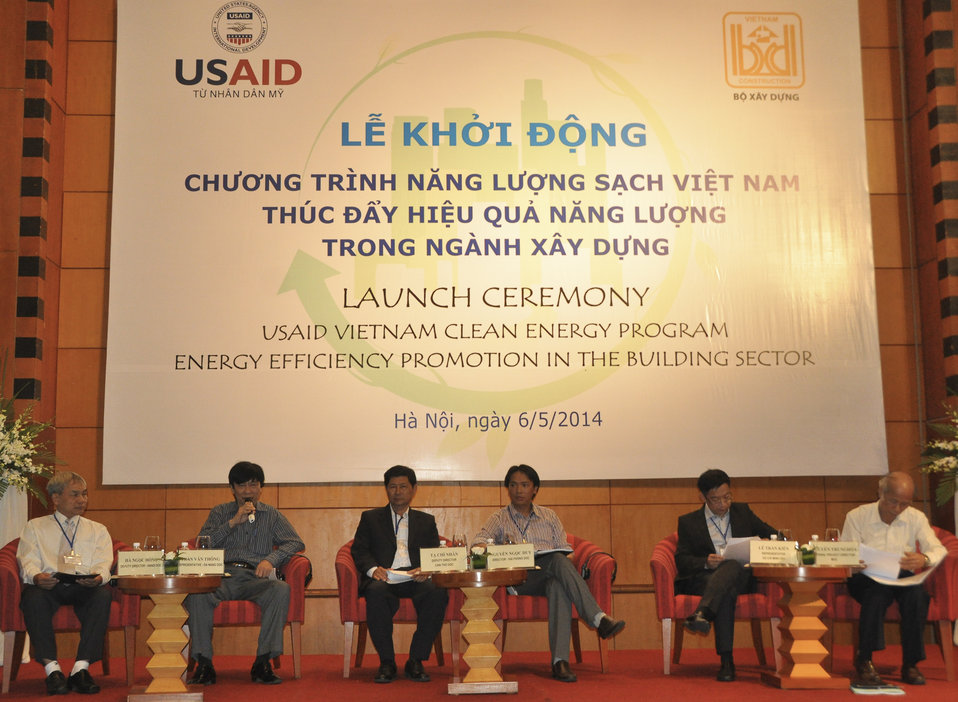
Representatives from provincial departments of construction participate in a panel discussion

Hanoi, May 6, 2014.